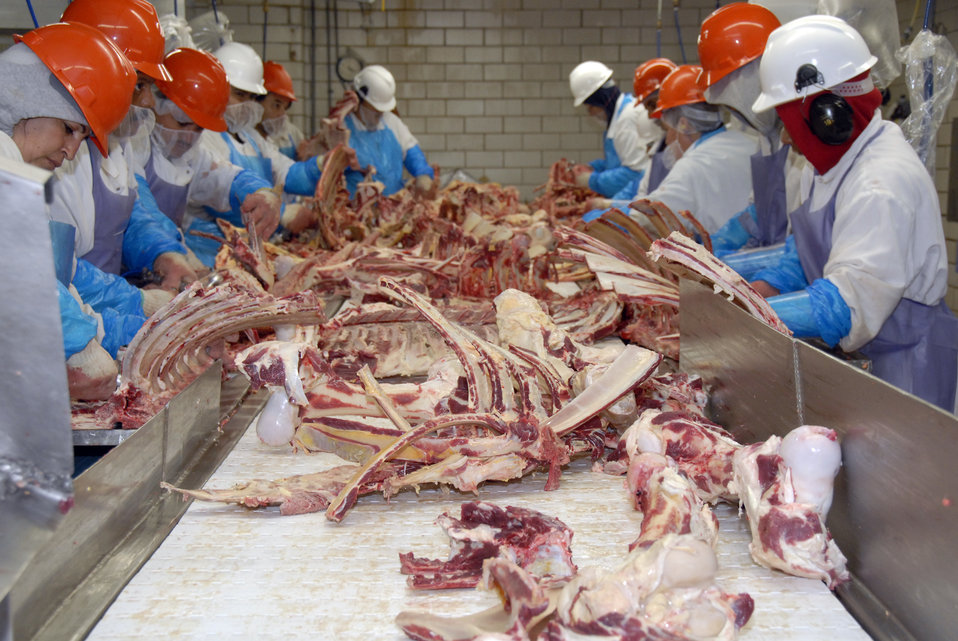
Workers at the L & H beef slaughterhouse in San Antonio, Texas on June 10, 2008 dissect, sort and separate beef parts. U.S. Department of Agriculture (USDA) Food Safety and Inspection Service (FSIS) inspectors are on site to ensure the beef is processed in accordance with USDA FSIS regulations.